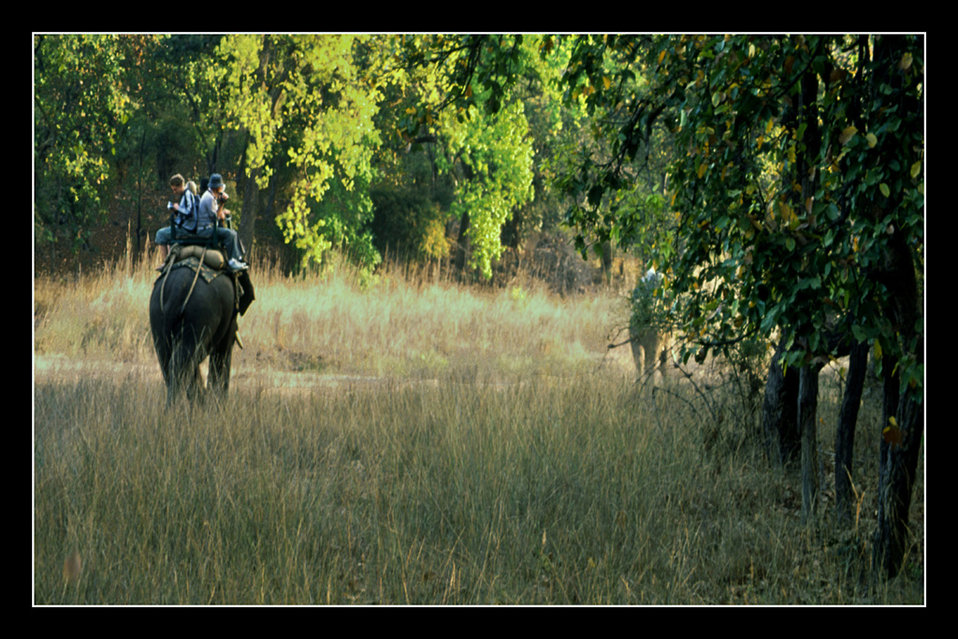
Uploaded by request of Deba Prasad Roy

Taken in 'Bandhavgararh Resurve Forest' in the State of Madhya Pradesh in India

Visitors from around the world come and enjoy viewing tiger in this resurve forest. The number of tigers in this resurve forest is considerably higher than other forests so the possibility of an encounter is also high